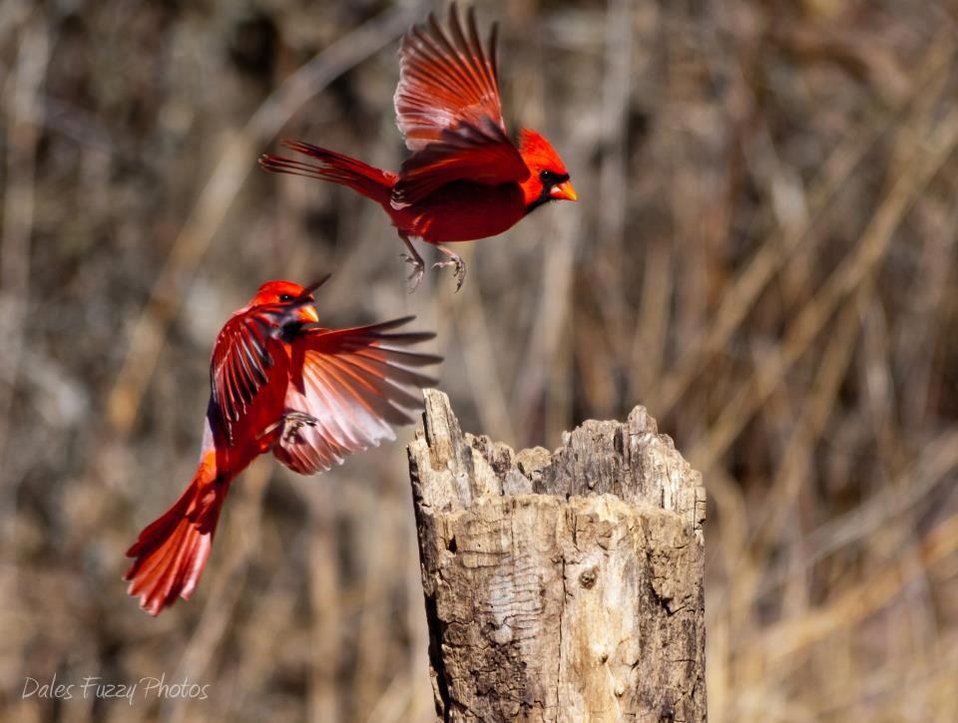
Photo of the Week - Two Male Cardinals

Photo of the Week 5/6/13

Cardinals photographed at Bombay Hook National Wildlife Refuge.